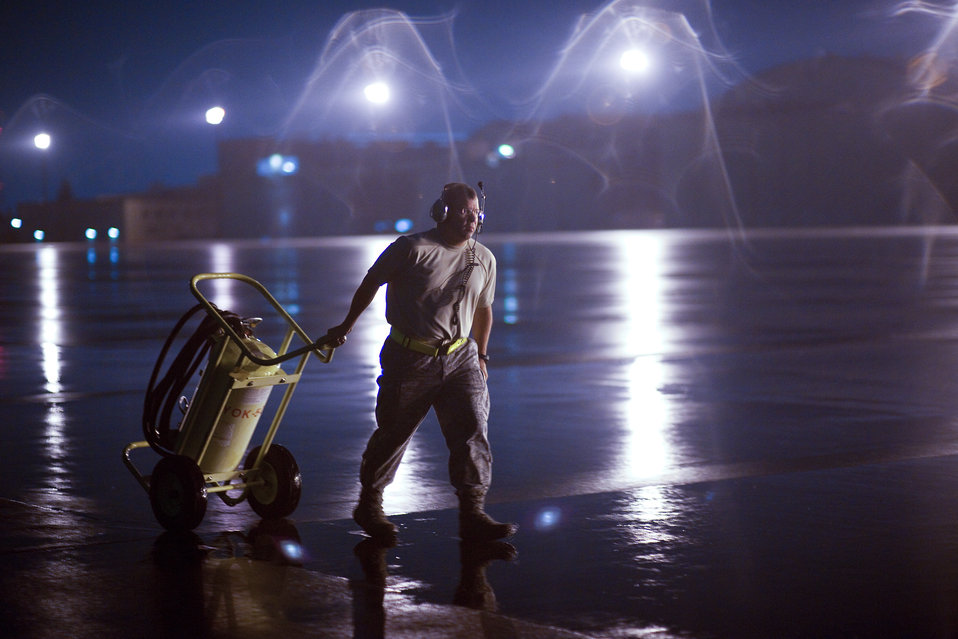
Rapid loading for the fight

Tech. Sgt. Ismael Reyes pulls up an aircraft fire extinguisher Sept. 15, 2010, after a C-5 Galaxy aircraft landed at Yokota Air Base, Japan. As the airlift hub of the western Pacific, Airmen at Yokota AB work operations 24/7 to keep inbound and outbound aircraft moving efficiently. Sergeant Reyes is with the 730th Air Mobility Squadron there.